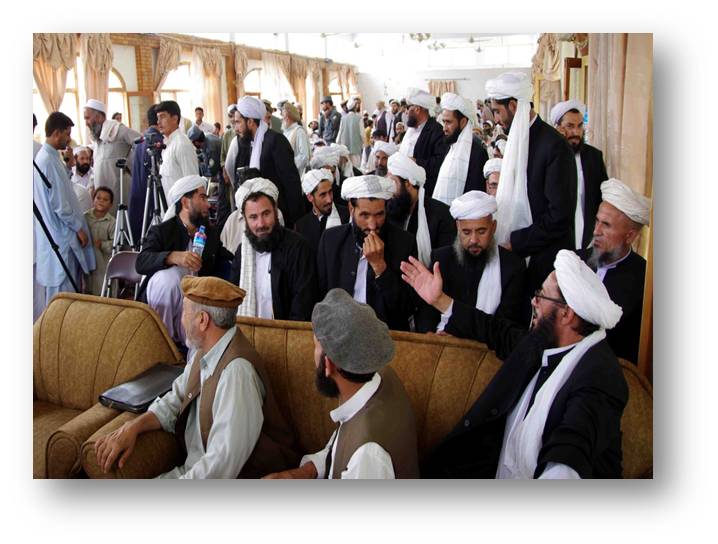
Court Convicts Two in High-Profile Public Trials